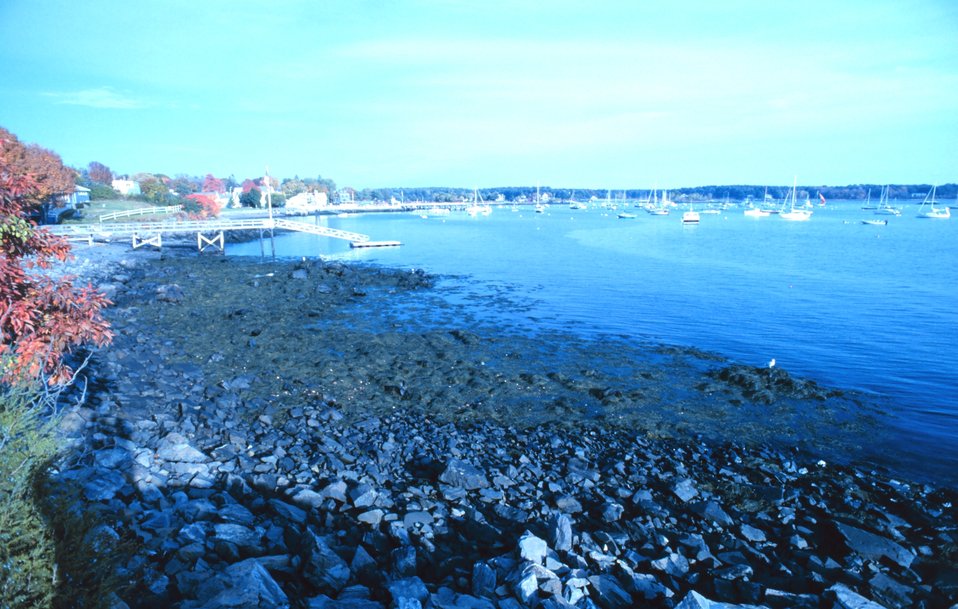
A view in the Portsmouth Harbor area